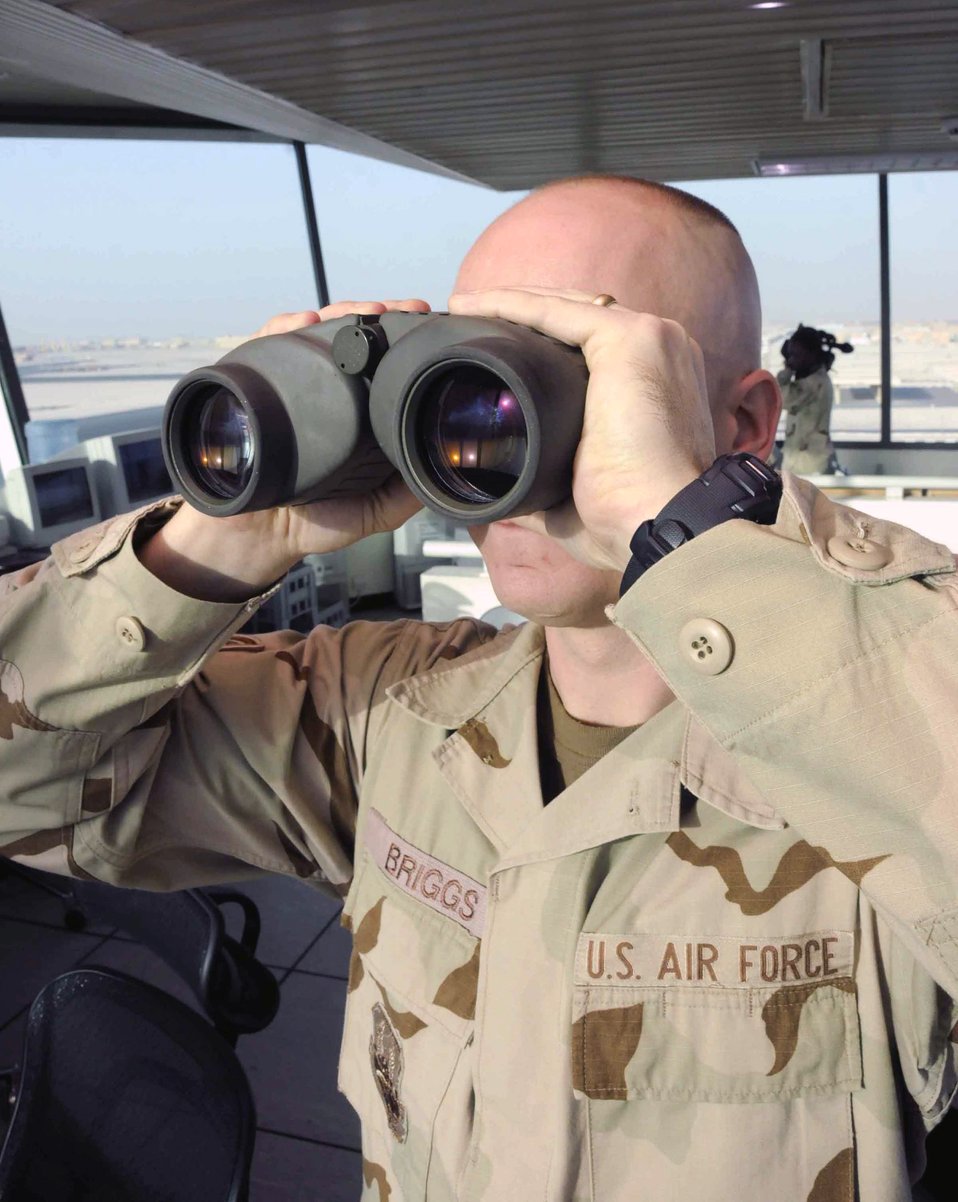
Air traffic controllers keep aircraft soaring

Tech. Sgt. Eric Briggs watches the flightline for incoming air traffic April 15 from the air traffic control tower at a Southwest Asian air base. Sergeant Briggs' duties as an air traffic control supervisor include overseeing and assisting junior Airmen in the career field.